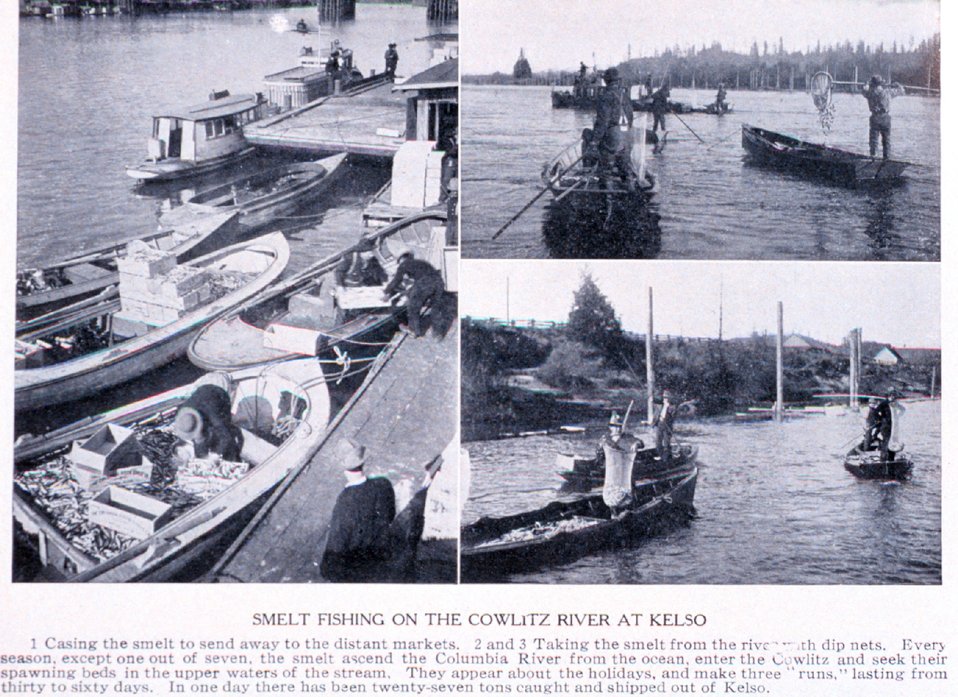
'Smelt Fishing on the Cowlitz River at Kelso'. In: 'Puget Sound and Western Washington Cities-Towns Scenery', by Robert A. Reid, Robert A. Reid Publisher, Seattle, 1912. P. 168.